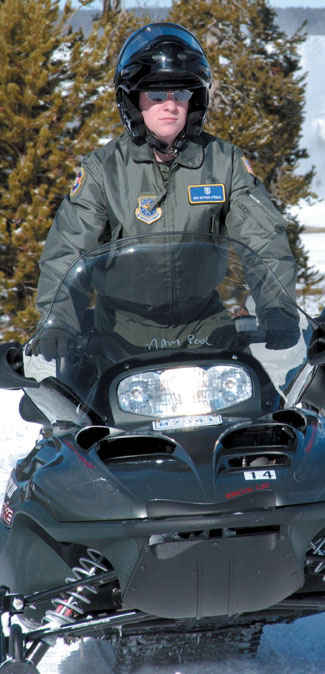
Snowmachine

YELLOWSTONE NATIONAL PARK -- Steele rides a snowmobile near Old Faithful during a medical exercise here called Winterops 2003. During Yellowstone's harsh winter season, snowmobiles are the quickest way for emergency medical technicians to get around the park.